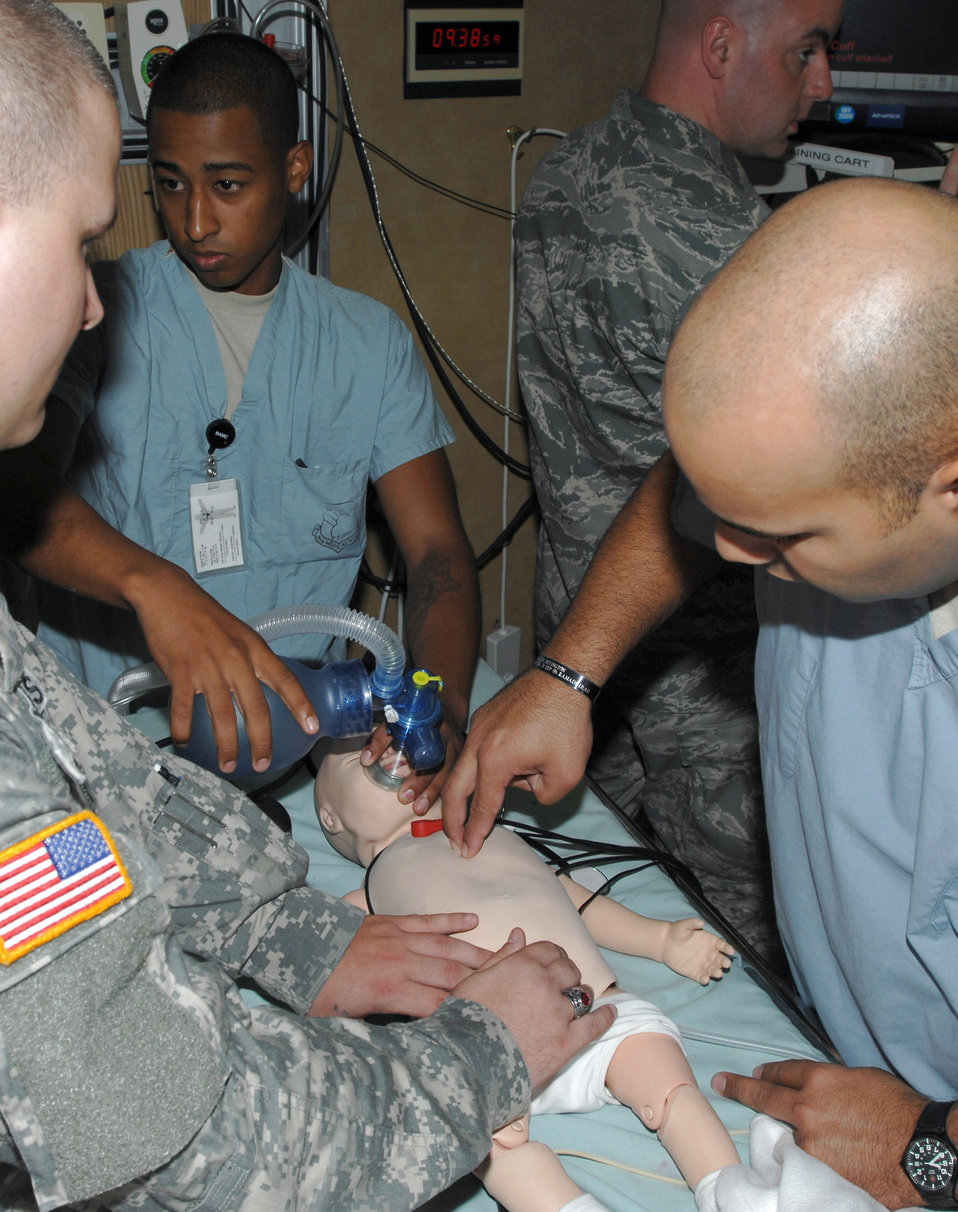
Simulation center prepares medics for saving lives

Medical residents use a mannequin to practice reviving an infant in the simulation center at Wilford Hall Medical Center on Lackland Air Force Base, Texas. The training is designed to replicate the stressful situations medics will encounter when treating patients. The simulation center is routinely used by both Air Force and Army medical residents training in a wide variety of specialties including pediatric intensive care.